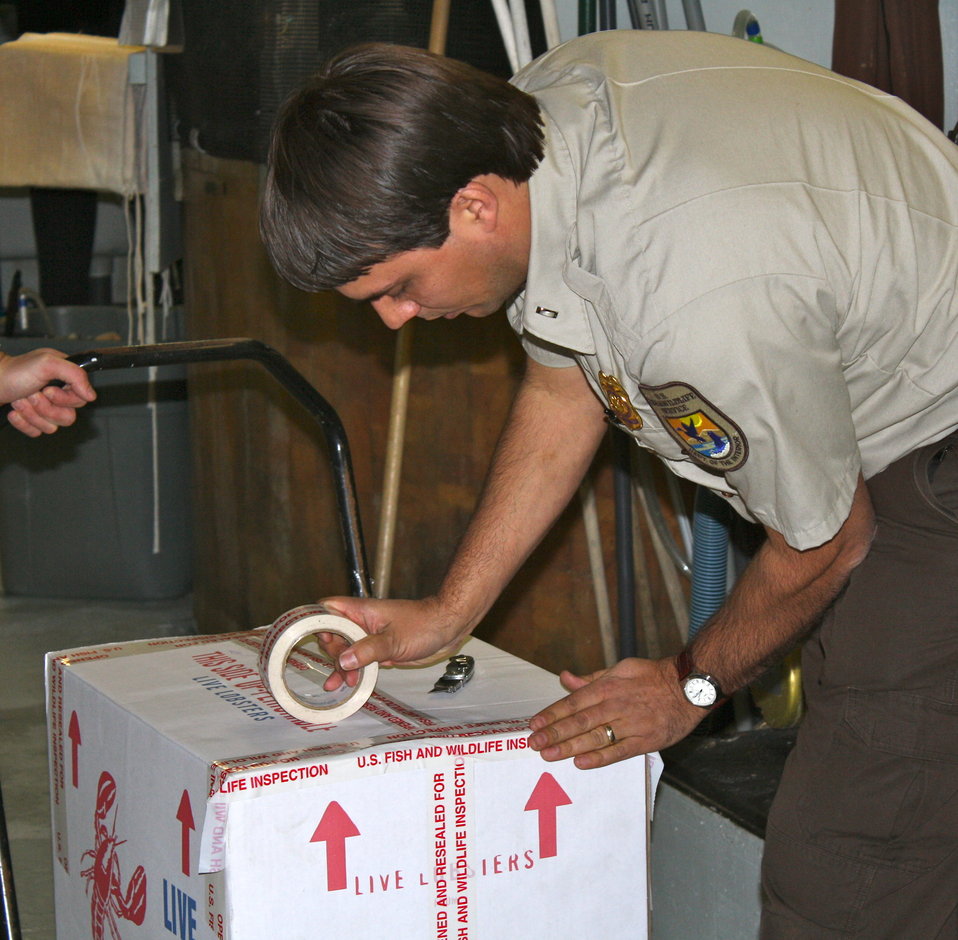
Inspector seals a live fish export at the New England Aquarium

After ensuring the humane export of a live goosefish, an inspector from the Chelsea, Mass. Office of Law Enforcement seals the export at the New England Aquarium.